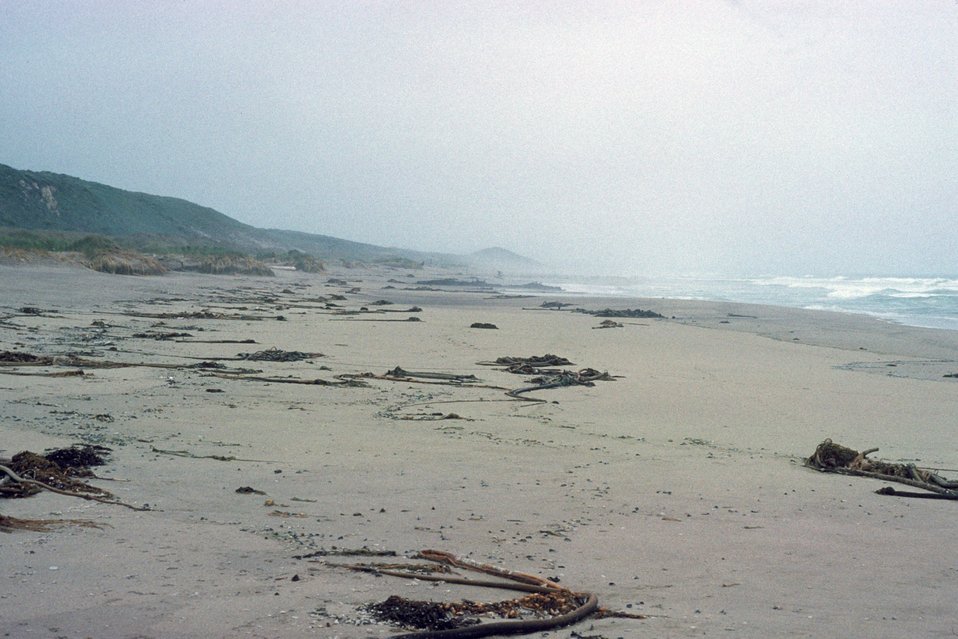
Point Reyes Great Beach. Looking south, possibly after a significant storm ripped up much kelp and it pushed ashore.